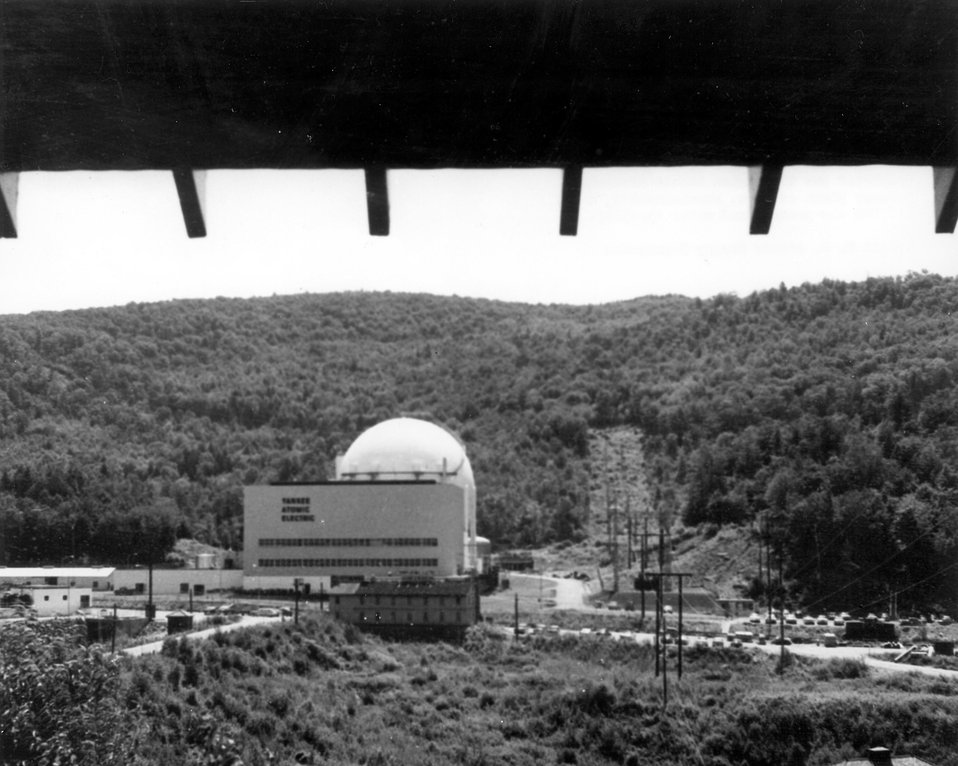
The first joint Atomic Energy Commission-industry nuclear power plant to be completed was the Yankee Atomic Electric Company plant at Rowe, Massachusetts, a 110,000 ekw pressurized water facility. Circa 1961.